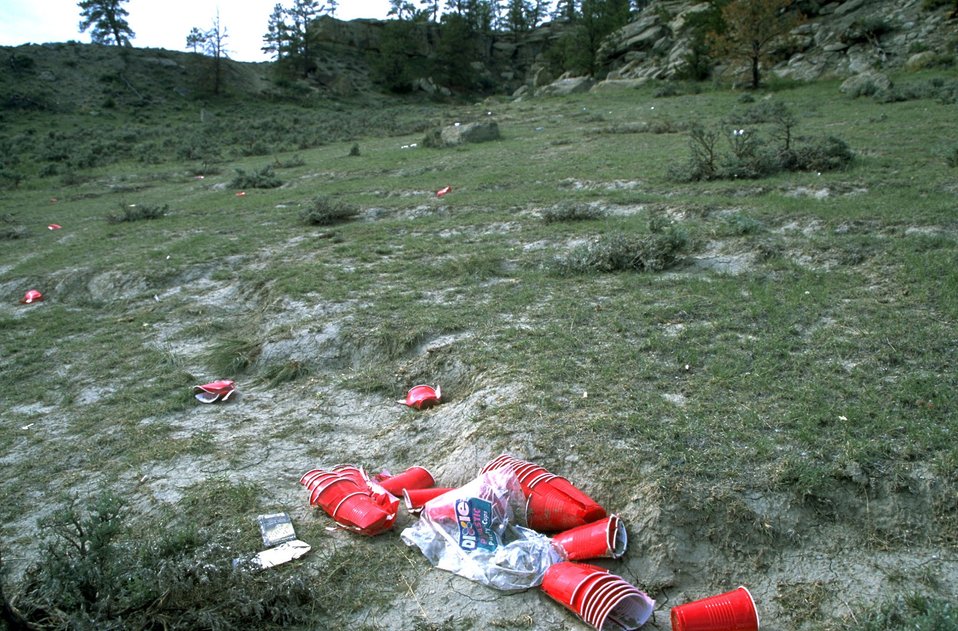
Trash from illegal ""kegger"" parties in the Acton Recreation Area